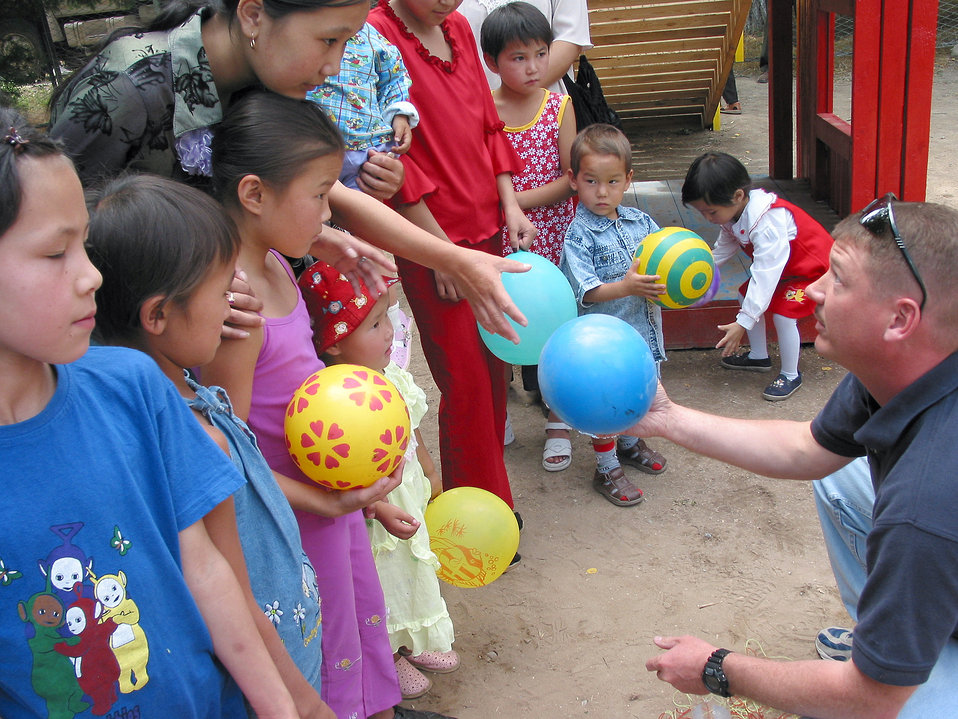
Play ball

OPERATION ENDURING FREEDOM -- Master Sgt. Daniel Lester hands balls to some of the children at the playground built by airmen deployed to Ganci Air Base, Kyrgyzstan. More than 68 airmen helped build a playground for children at the nearby Kyrgyzstan Tuberculosis Research Institute. Lester is assigned to the 376th Expeditionary Communications Squadron at Ganci AB.